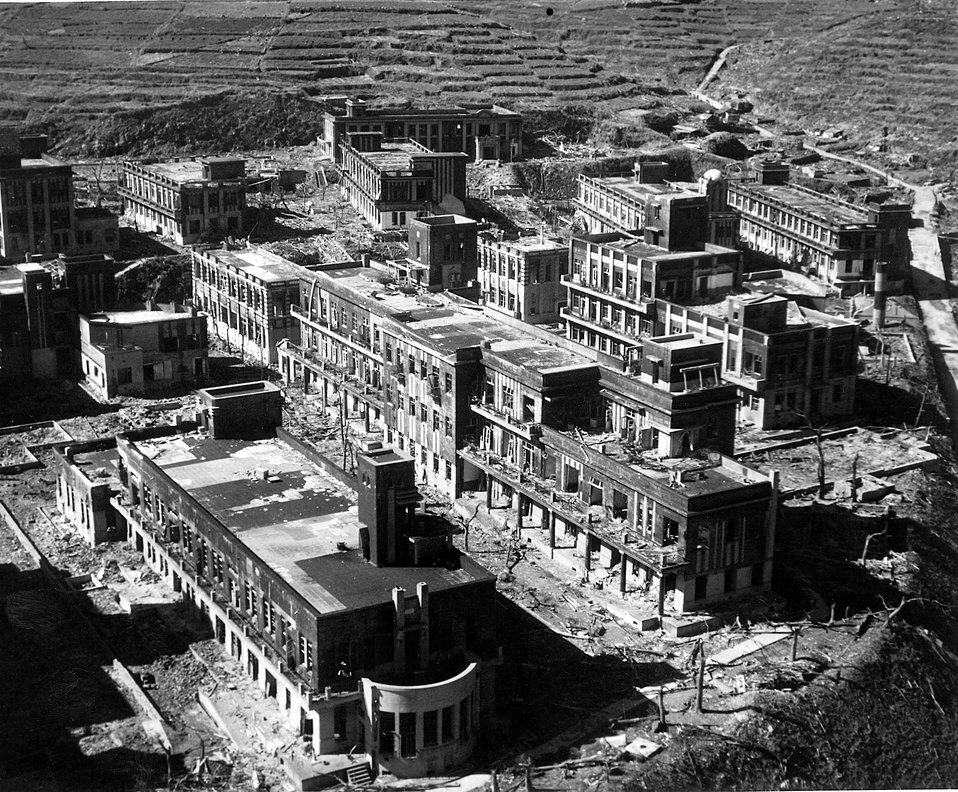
ATOMIC BOMBING OF JAPAN